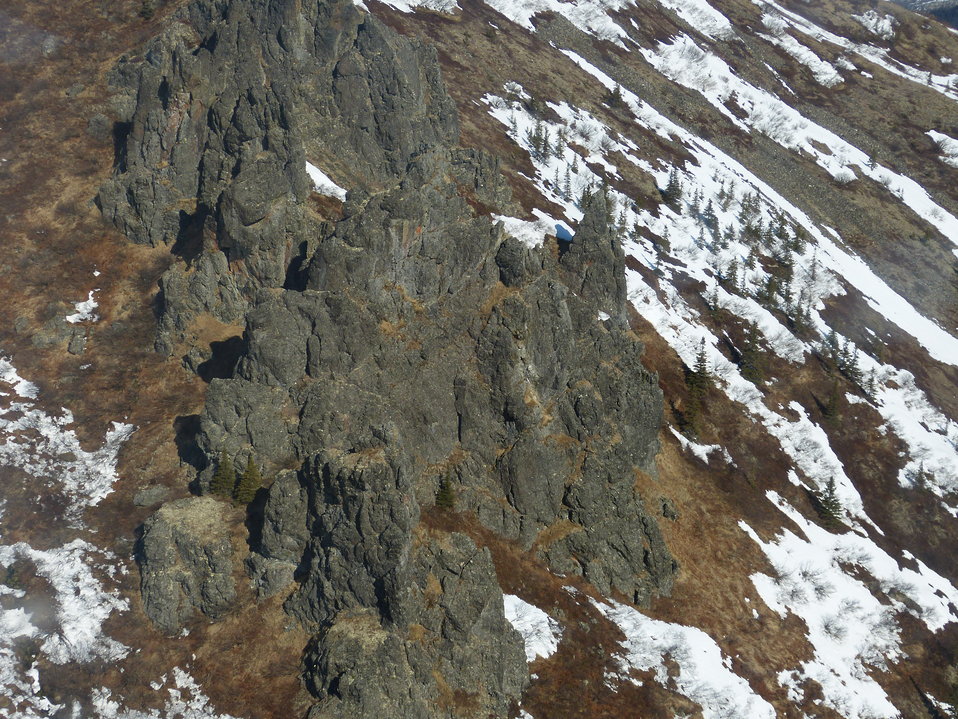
Kilbuck Mountains May2013 KSowl

Cliff-nesting raptor survey, Kilbuck Mountains, Yukon Delta National Wildlife Refuge

Photo credit: Kristine Sowl,
USFWS, YDNWR